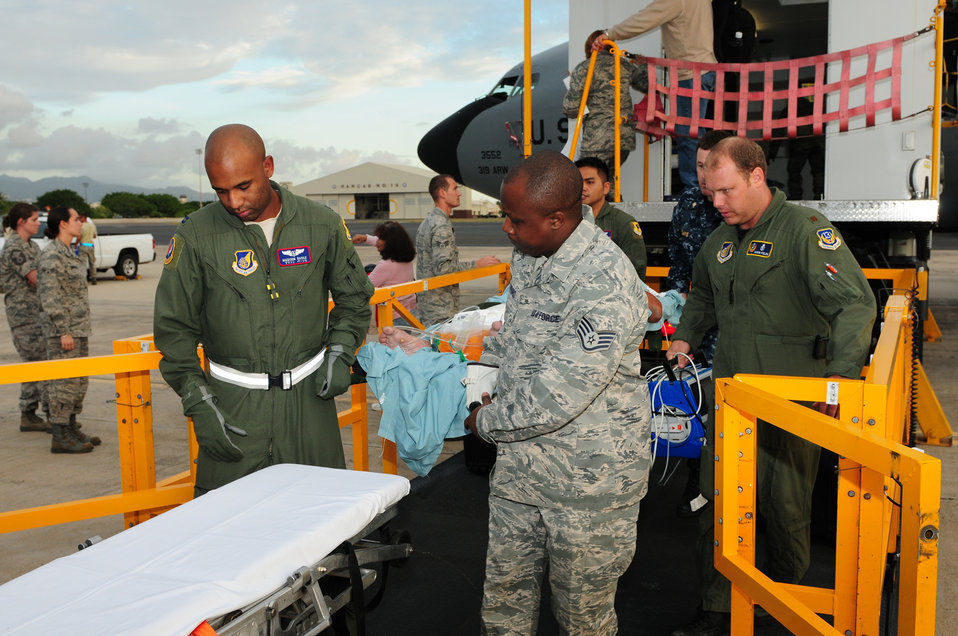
CCATT Transfer

Medical personnel transport a critically ill patient from a KC-135 Stratotanker to Tripler Army Medical Center Nov. 17, 2010. This is the first time CCATT East element has transported a critically ill patient during peacetime. The CCATT is a specialized, three-person medical team whose primary mission is to provide critical-care management for critically ill or injured patients who require transport to advanced medical treatment facilities. The medical team is from the 18th Aeromedical Evacuation Squadron at Kaden Air Base Japan; the 15th Medical Group and Critical Care Air Transport Team East element at Joint Base Pearl Harbor-Hickam, Hawaii; and Tripler Army Medical Center, Hawaii,